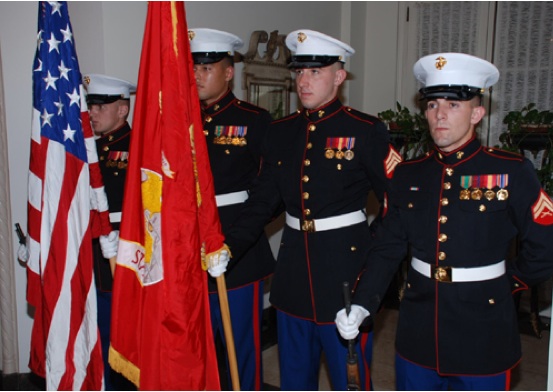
USINT Marine Corps Guard Present Arms at U.S. Independence Day Celebration

United States Interest Section Havana Marine Corps Guard present arms U.S. Independence Day reception in Havana, Cuba, on July 2, 2010.